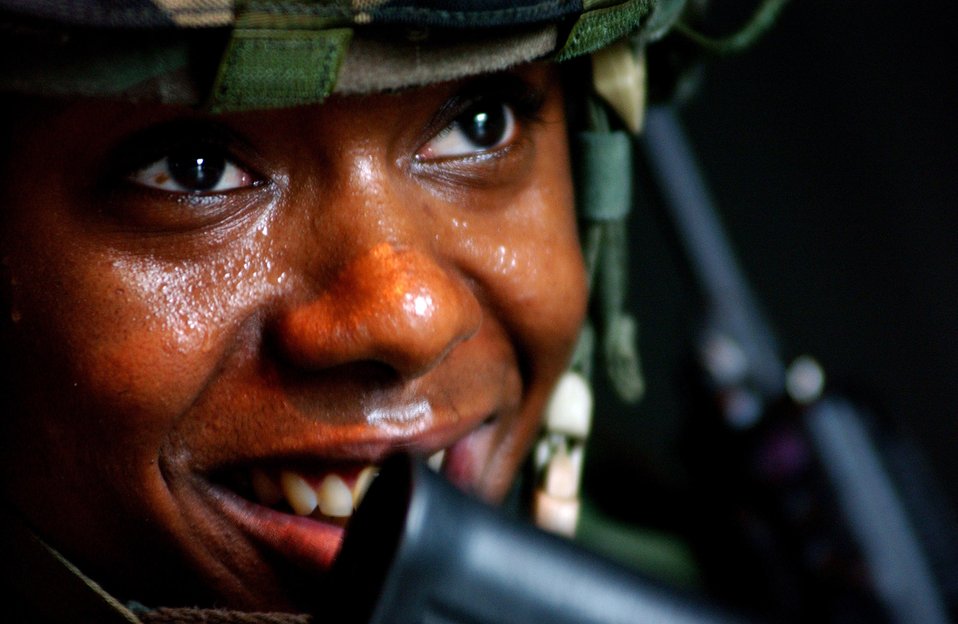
Counter attack

Airman 1st. Class Sankar Montoule leads a counter attack Aug. 29 against simulated enemy insurgents during a force-on-force training exercise on Aviano Air Base, Italy. Airman Montoule is with the 31st Security Forces Squadron.